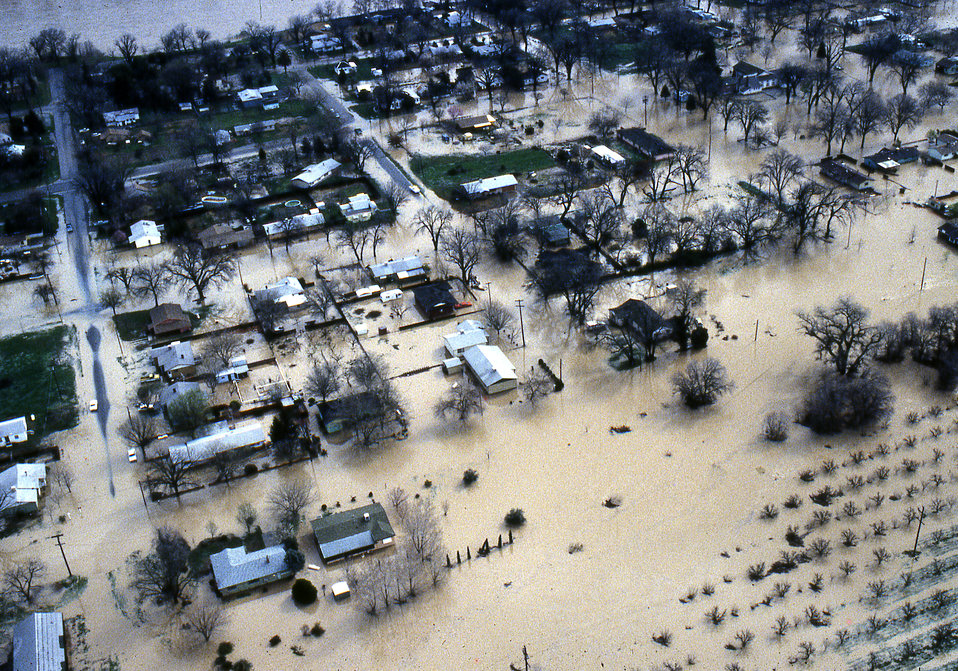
Flooding in Tehama 1986

A flooded neighborhood in Tehama, Calif., shown in February 1986